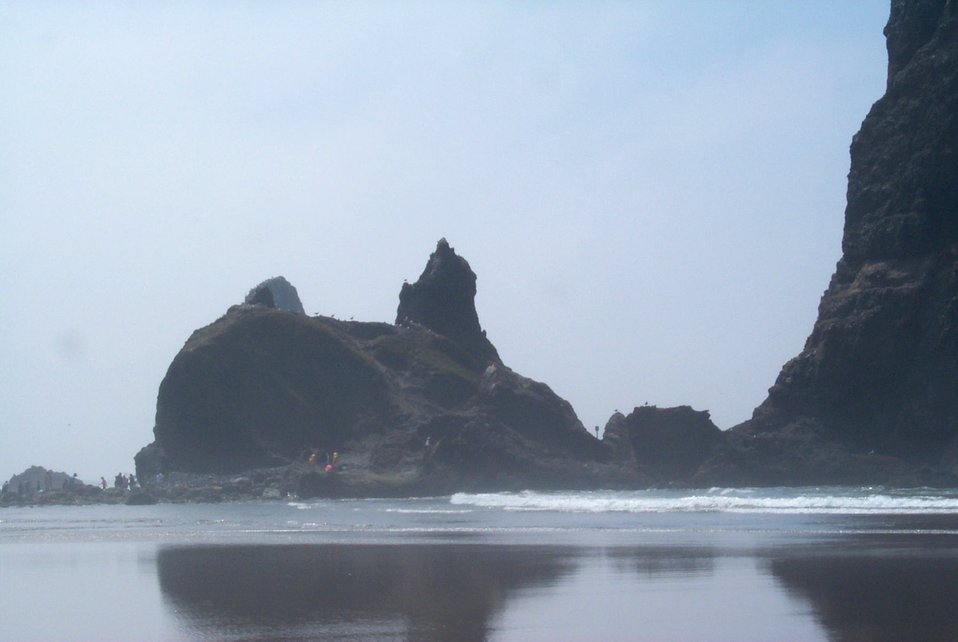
Looking south at the base of Haystack Rock at Cannon Beach.